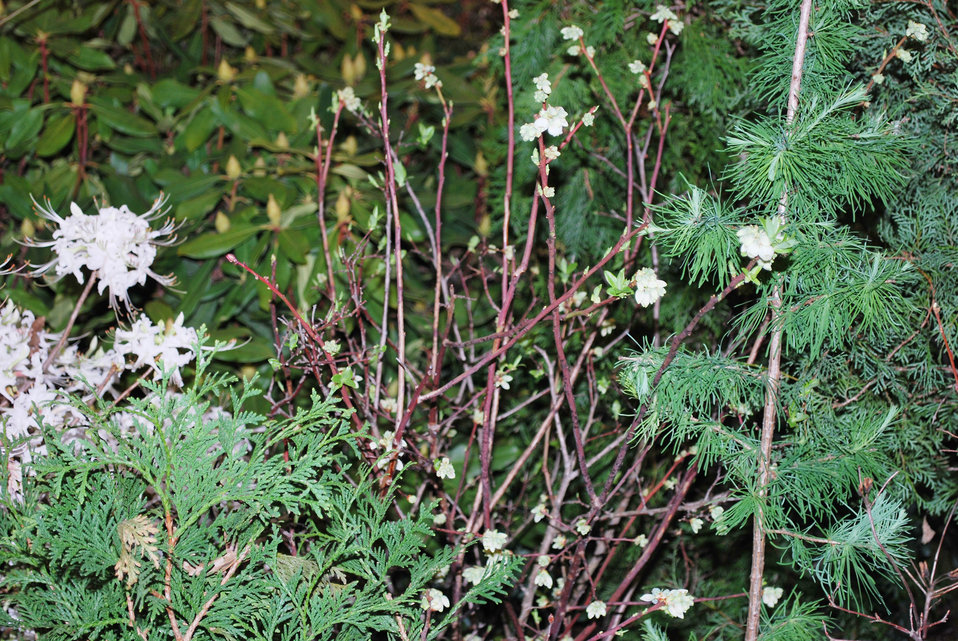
EPA's display at the Philadelphia Flower Show, 2014

A variety of native plants depicting a natural community in the mid-Atlantic region in our exhibit at the 2014 Philadelphia Flower Show.